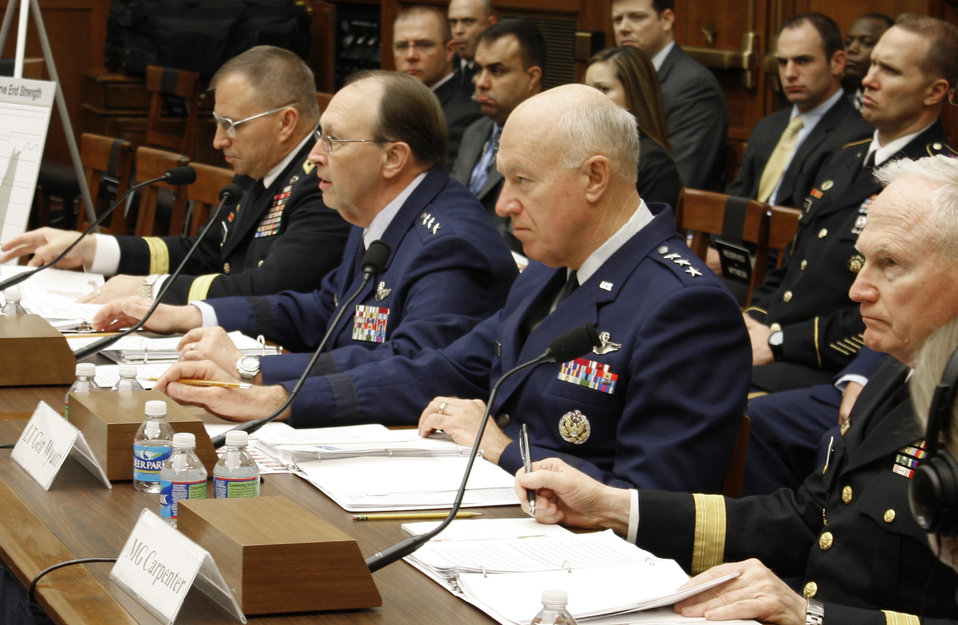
Air Force Reserve efficiencies and budget discussed on Capitol Hill

Army and Air Force Reserve component chiefs testified and discussed equipment and budget needs with the congressional Subcommittee on Tactical Air and Land Forces on April 1, 2011, in Washington D.C.